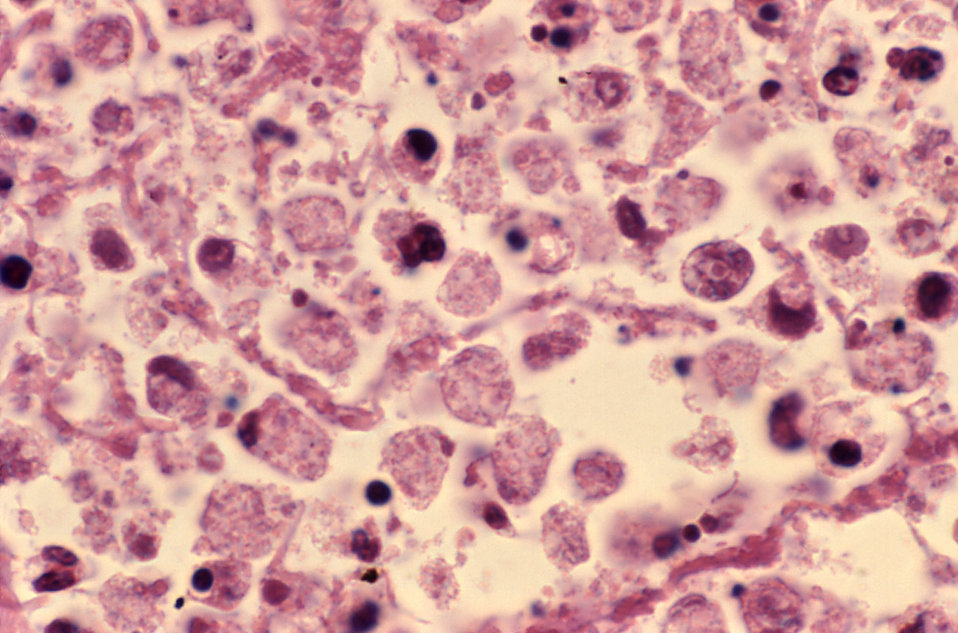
This micrograph depicted details seen in a lung tissue specimen from a Knoxville patient with fatal pneumonia due to Legionnaires' disease. The tissue was stained using hematoxylin-eosin (H&E) stain. Legionella pneumophila are Gram-negative bacteria. Using H&E stain, these organisms, if present in the specimen, would stain a pink or red color. Note how the alveolar spaces are congested with a leukocytic infiltrate in response to the infection.How serious is it? What is the treatment?